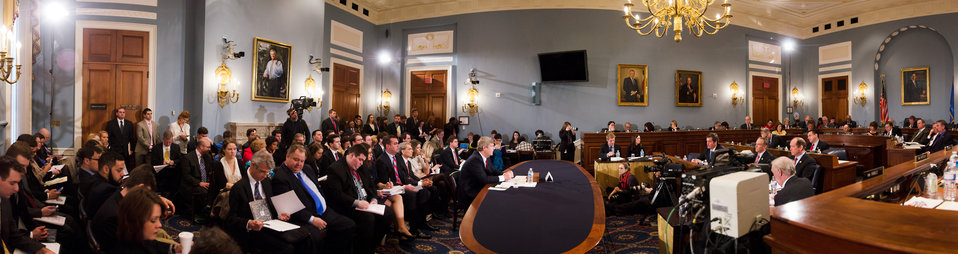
(Virtual Panorama) Agriculture Secretary Tom Vilsack testifies before the House Agriculture Committee regarding the “State of the Rural Economy“ at the Longworth House Office Building in Washington, D.C. on Tuesday, Mar. 5, 2013.